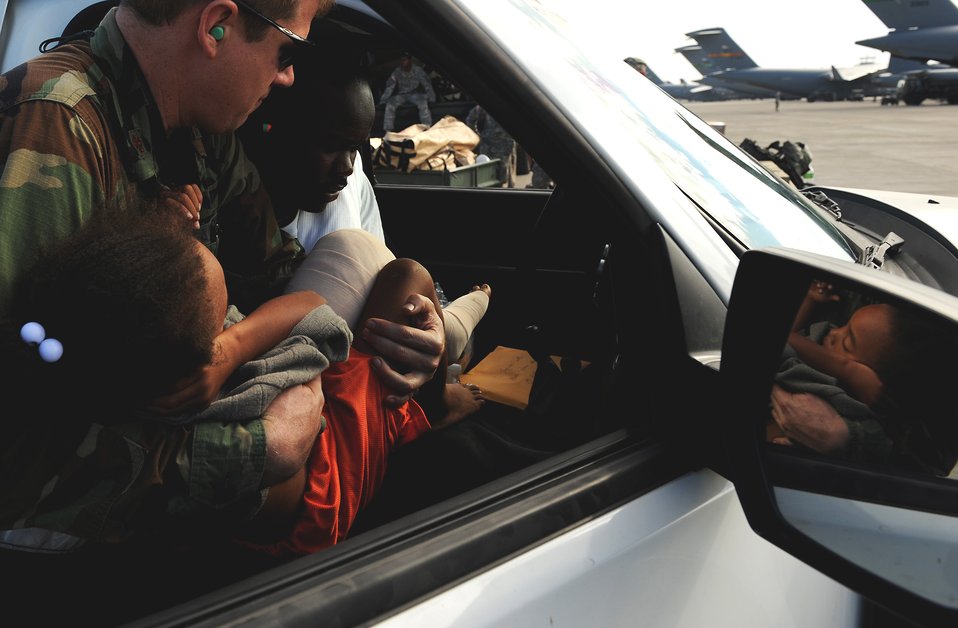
AFSOC pararescuemen work to save lives

Maj. Timothy Ballard, 1st Special Operations Support Squadron, at Hurlburt Field, Fla., loads a 6-year-old Haitian boy into a vehicle for transport to a field clinic at Toussaint L'Ouverture International Airport in Port-au-Prince, Haiti, Jan. 19, 2010, before being flown to a stateside hospital in southern Florida. U.S. Department of Defense assets have been deployed to assist in the Haiti relief effort following the earthquake that hit Port-au-Prince Jan. 12, 2010.